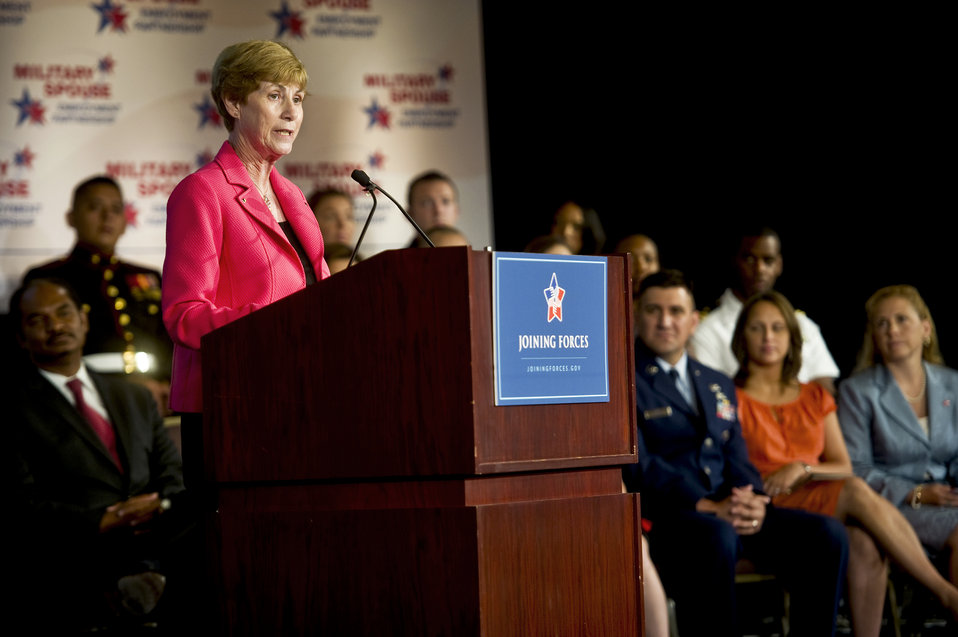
Spouse employment

Deborah Mullen, the wife of Chairman of the Joint Chiefs of Staff Navy Adm. Mike Mullen, addresses audience members at the Military Spouse Employment Partnership kickoff June 29, 2011, at the U.S. Chamber of Commerce in Washington. The partnership helps promote meaningful, long-term employment opportunities between U.S. employers and military spouses.